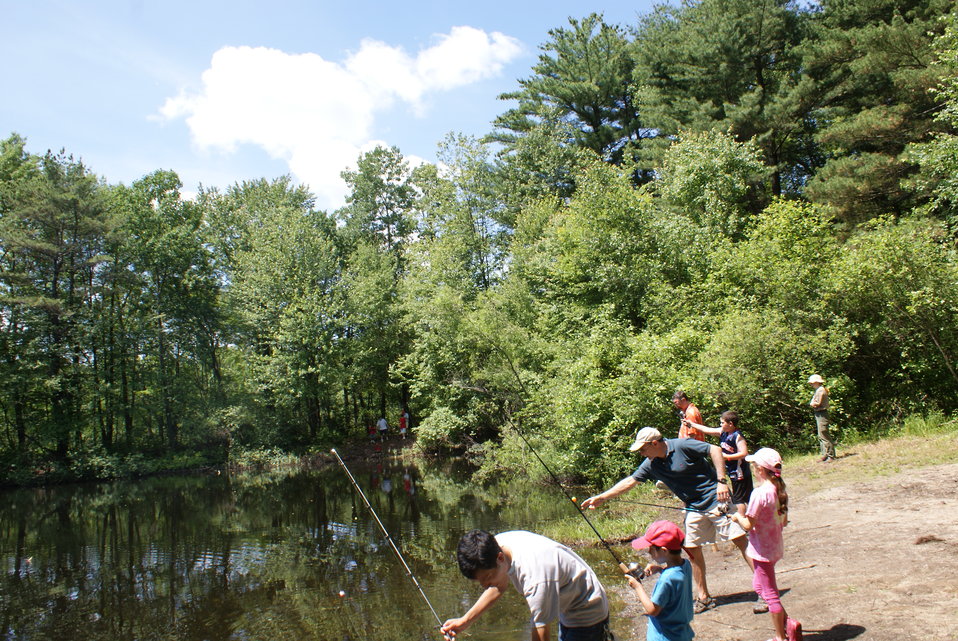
Great Meadows Fishing Day 2010

Great Meadows National Wildlife Refuge in Massachusetts holds an annual fishing day where all anglers -- beginners and experienced -- join refuge staff and other experts for a day filled with fishy fun!

Visitors learn how to fly-cast, spin-cast, and even tie your own fly. All equipment and instruction is provided, and there are always games, crafts, music and face painting as well.